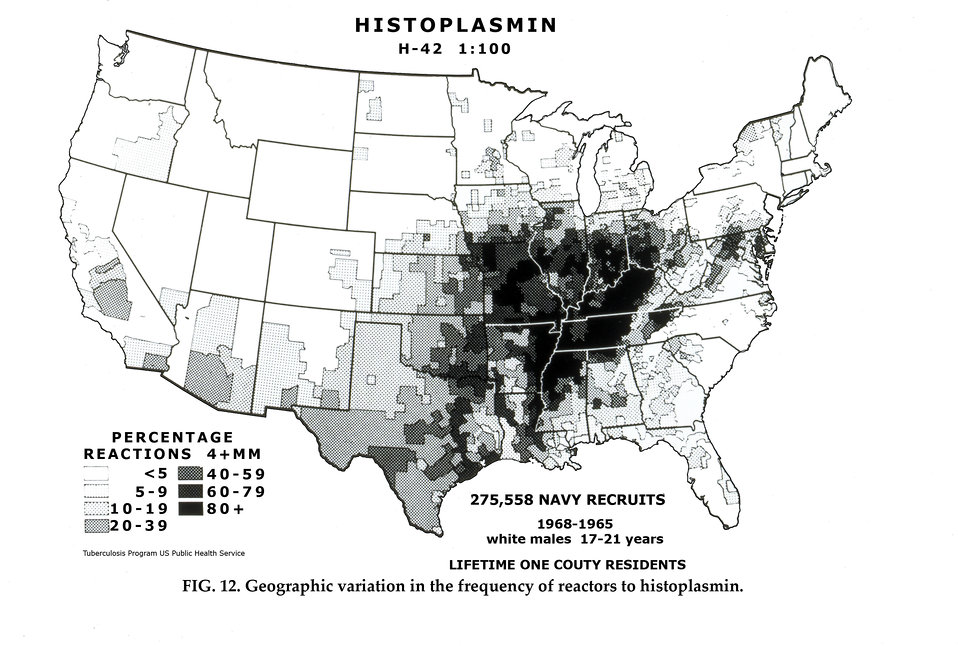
Map of United States showing geographic variation in the frequency of Navy recruit reactors to histoplasmin, 1958-1965.